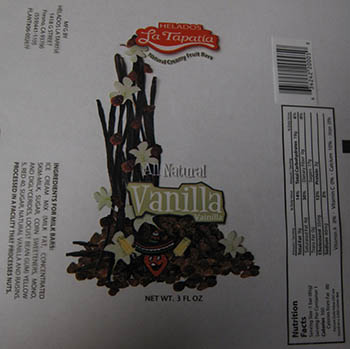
RECALLED – Ice cream products

March 19, 2014 – Product Recall – Helados La Tapatia, Inc. Recalls Products Because of Possible Health Risk.